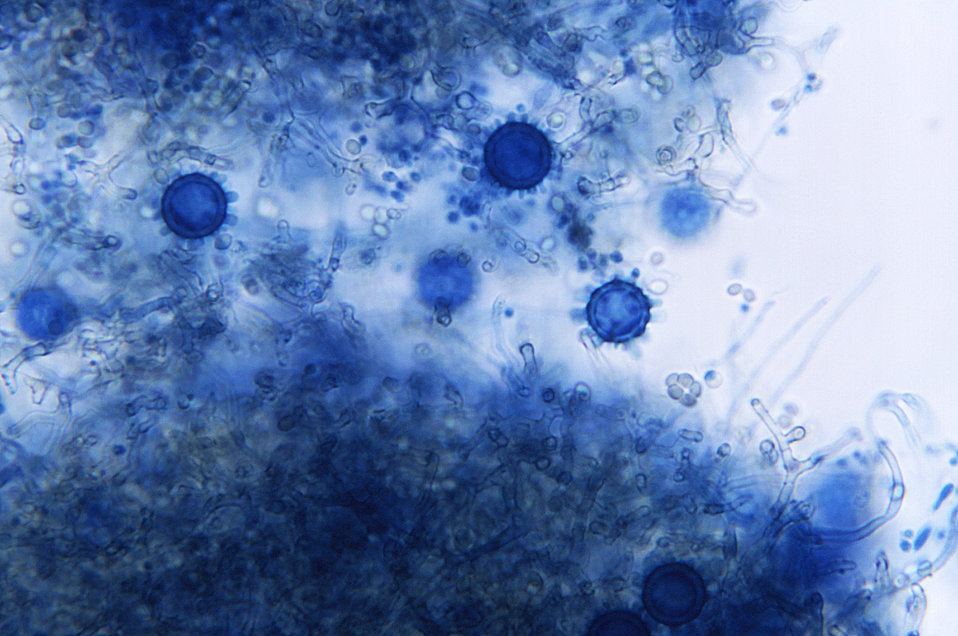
Under a relatively-low magnification of 166X, this photomicrograph revealed some of the ultrastructural morphology displayed by Gymnoascus demonbreunii fungal organisms, including numerous peridial hyphae, and macroconidia.